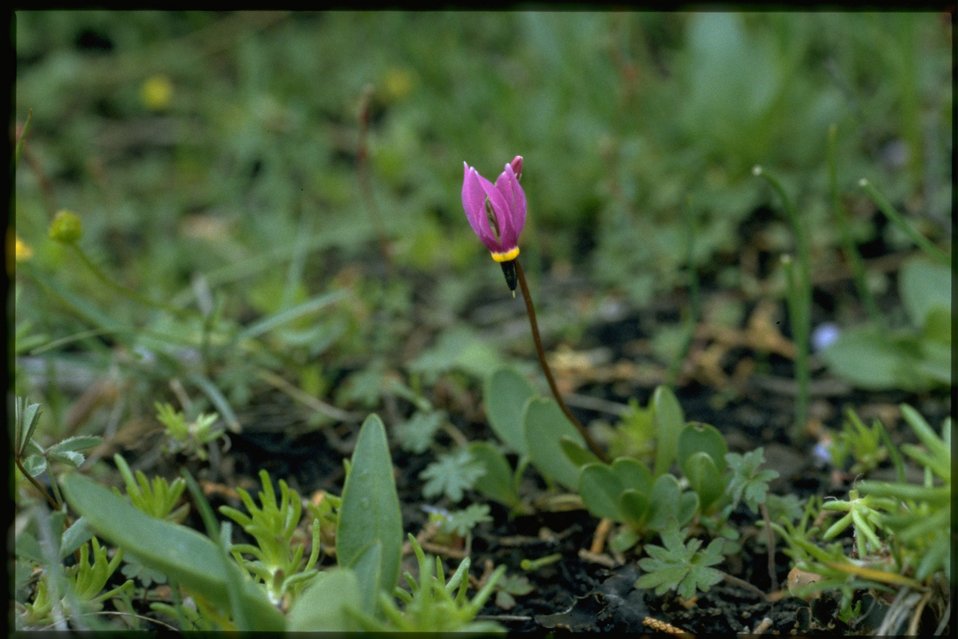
Medium shot of Dark-Throat Shooting Star, Dodecatheon Pulchellum, wildflower.